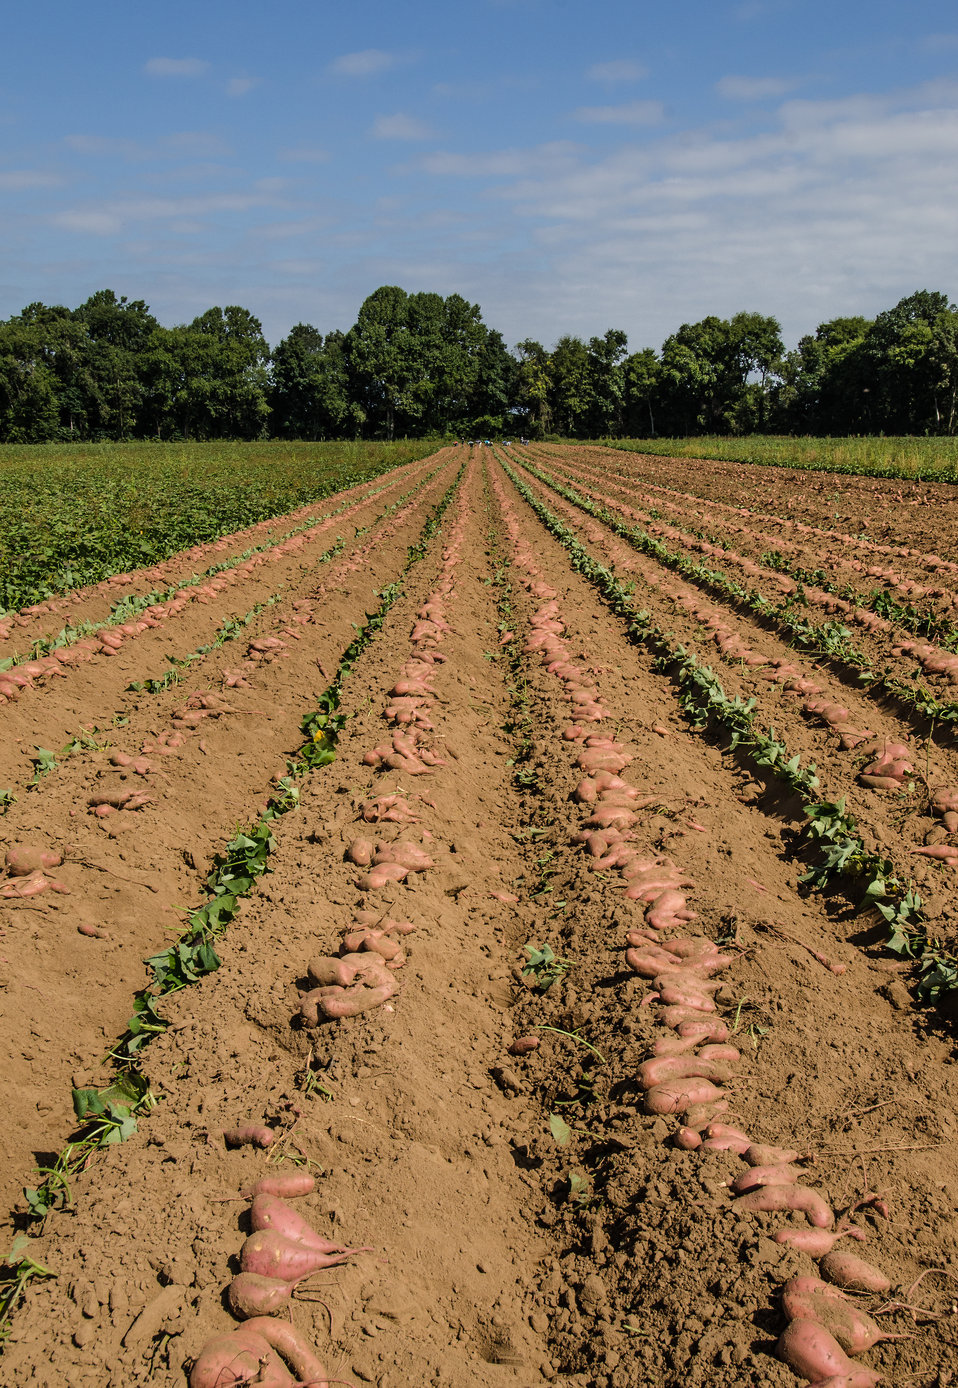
Harvested hand picked large sweet potatoes, at Kirby Farms in Mechanicsville, VA on Friday, Sept. 20, 2013. 200 acres of the farm are devoted to eggplant, spinach, beets, tomato, jalapeno peppers, melons and a variety of greens. Soybeans and small grain are grown on the remaining 300 acres. Using rotational crop practices allows Kirby Farms to double and triple crop yields. Wholesalers, who buy from this farm, sell the produce to major supermarkets in the Mid-Atlantic region, from North Carolina to Maryland. Restaurants in the local area prepare and serve the local bought produce to patrons in the Richmond, VA metropolitan area.